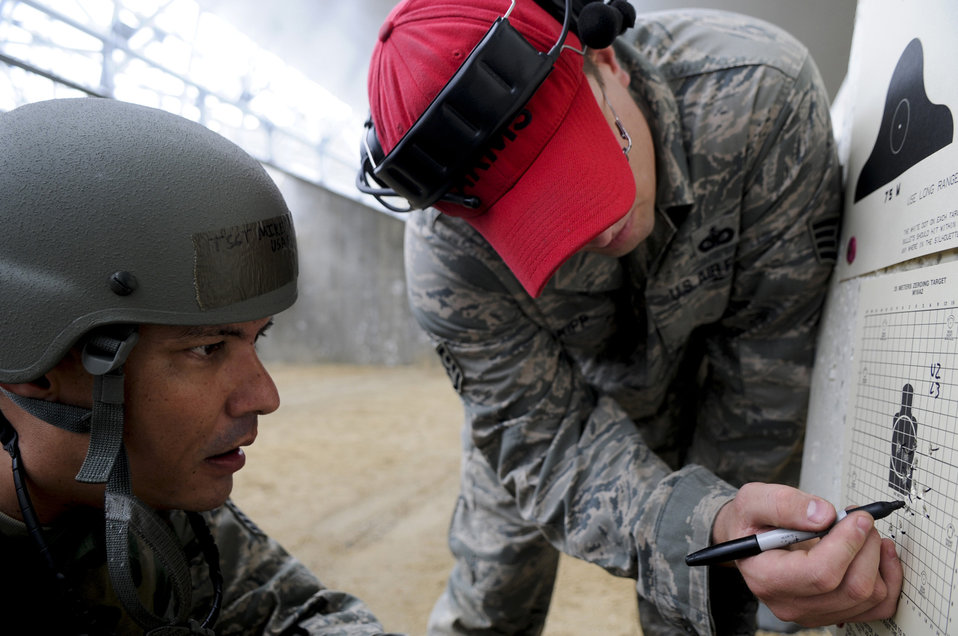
Combat arms training

Tech. Sgt. Michael Tateishi watches Staff Sgt. James Kipp, his instructor, indicate sight corrections on the zeroing target May 24, 2011, during combat arms training at Kadena Air Base, Japan.